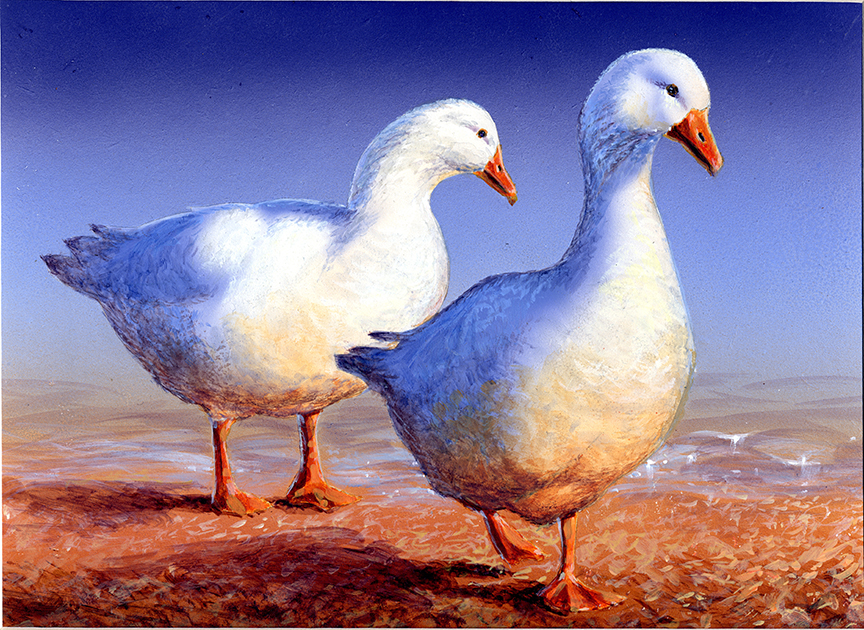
JRDuck2013MO

2013 Junior Duck Stamp Best of Show-Missouri